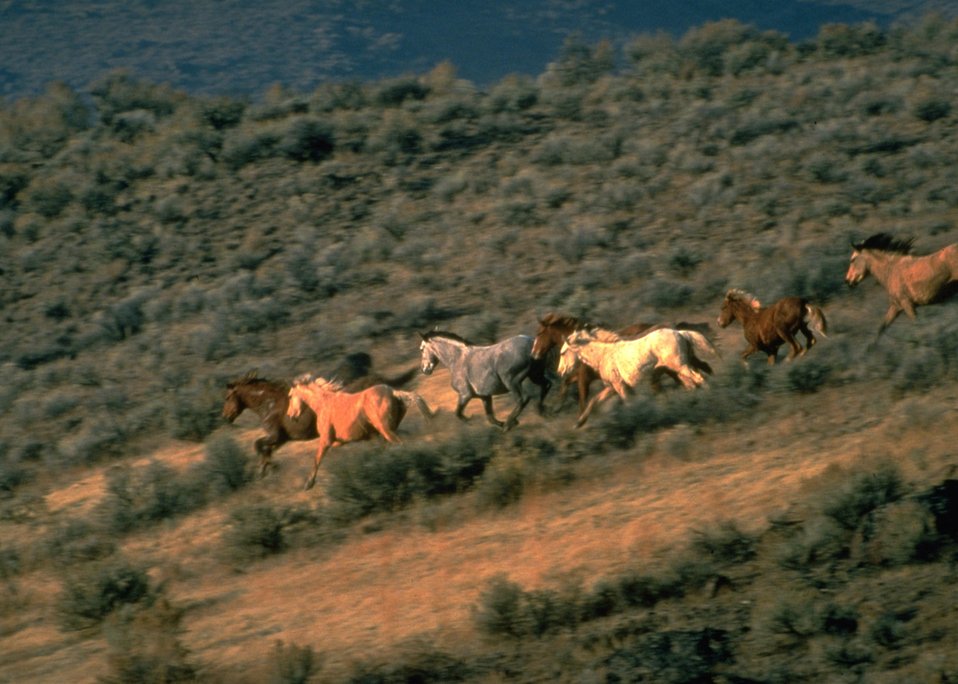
Wild horses.